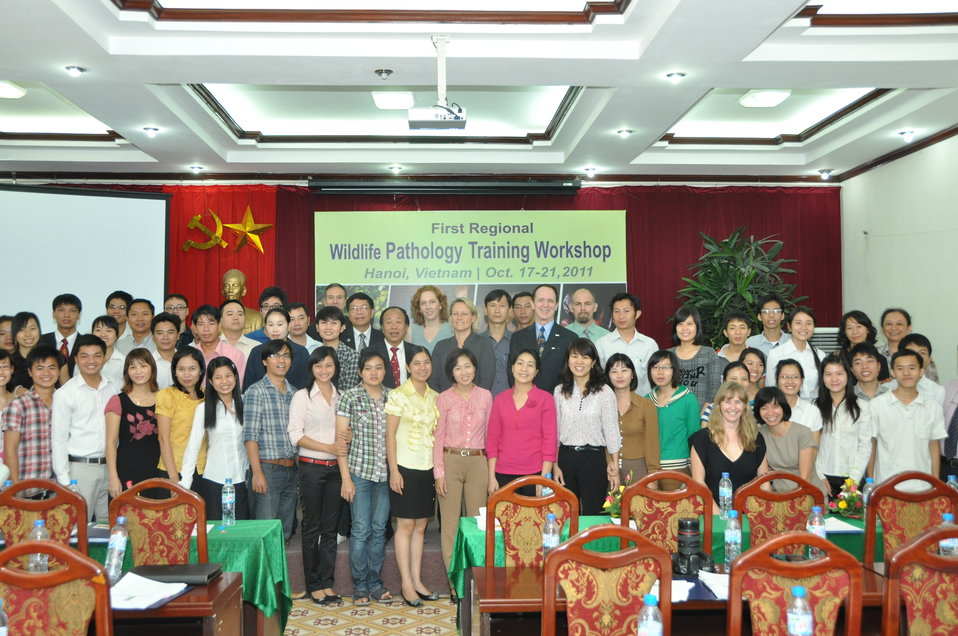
EPT PREDICT Pathology Workshop Group Shot